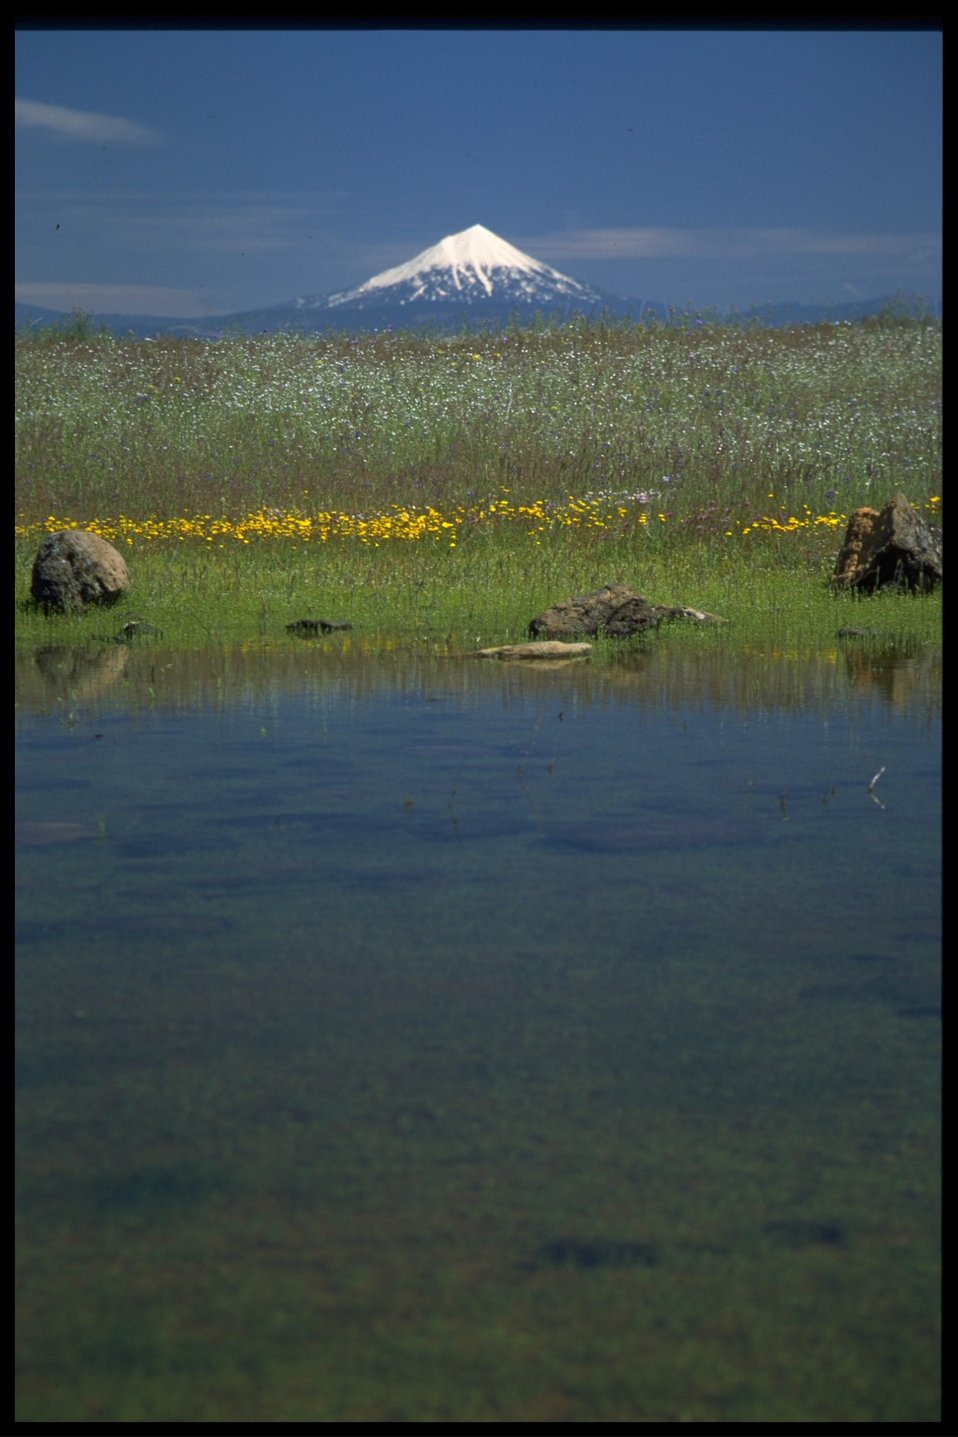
Scenic view of Mt. McLoughlin, vernal pools, Lasthenia californica, Plagiobothrys fulvus, Dichelostemma, and Amsincka intermedia.